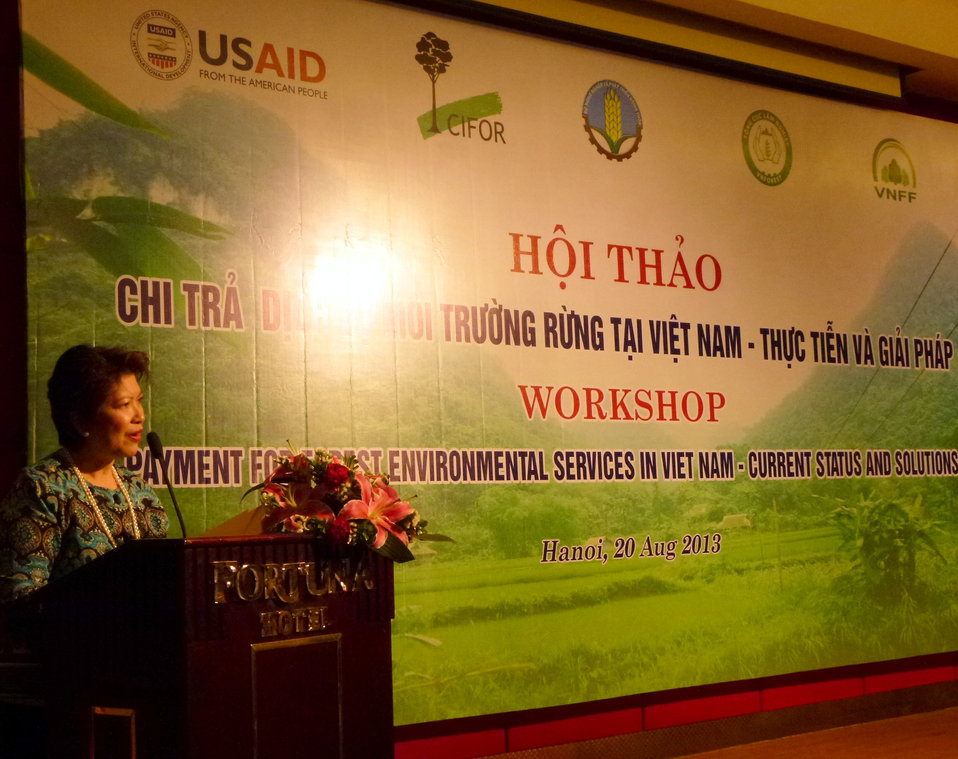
Payment for Forest Environmental Services Workshop

Chato Calderon, USAID Senior Climate Change Advisor

Hanoi, August 20, 2013